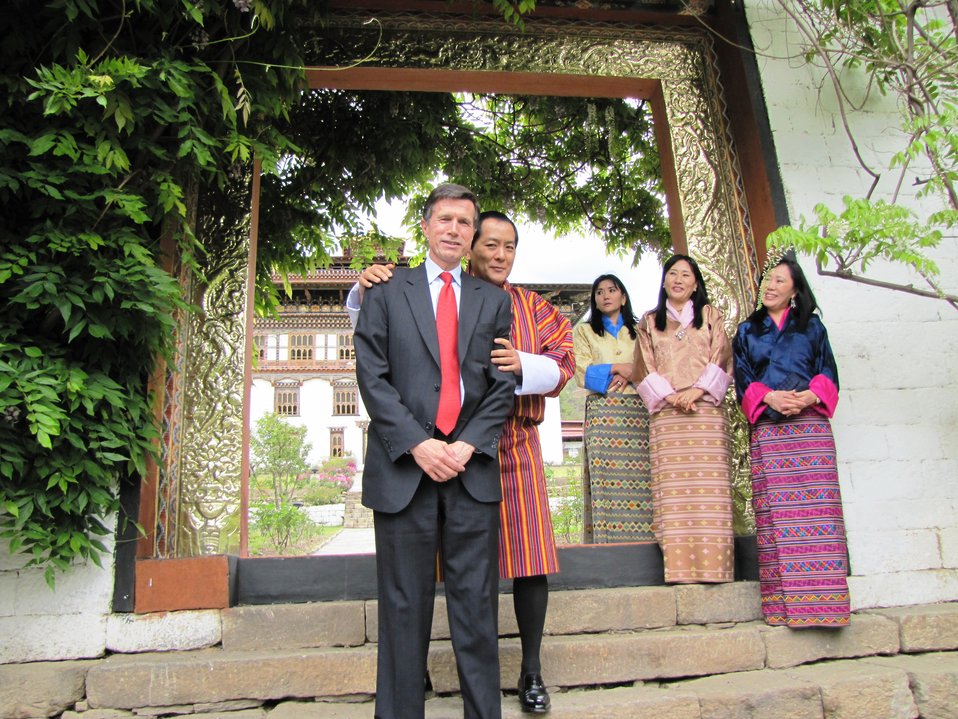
Assistant Secretary Blake, the Fourth King of Bhutan Jigme Singye Wangchuk, and Three of His Wives in Thimphu, Bhutan

Assistant Secretary of State for South and Central Asian Affairs Robert Blake, the Fourth King of Bhutan Jigme Singye Wangchuk, and three of his wives pose for a photo in front of Dechencholing Palace, in Thimphu, Bhutan, on April 29, 2010.